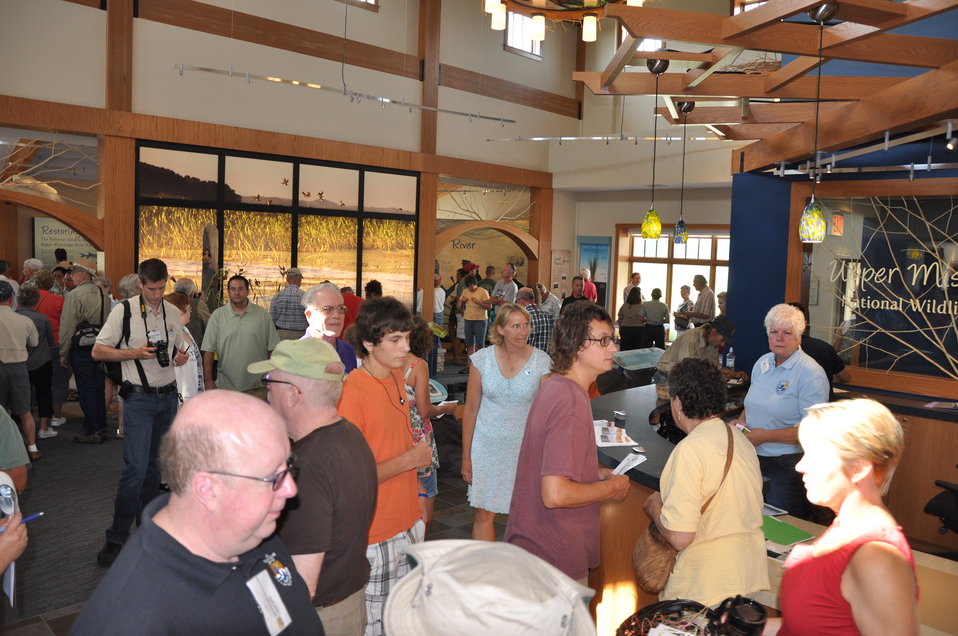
Crowd inside new visitor center